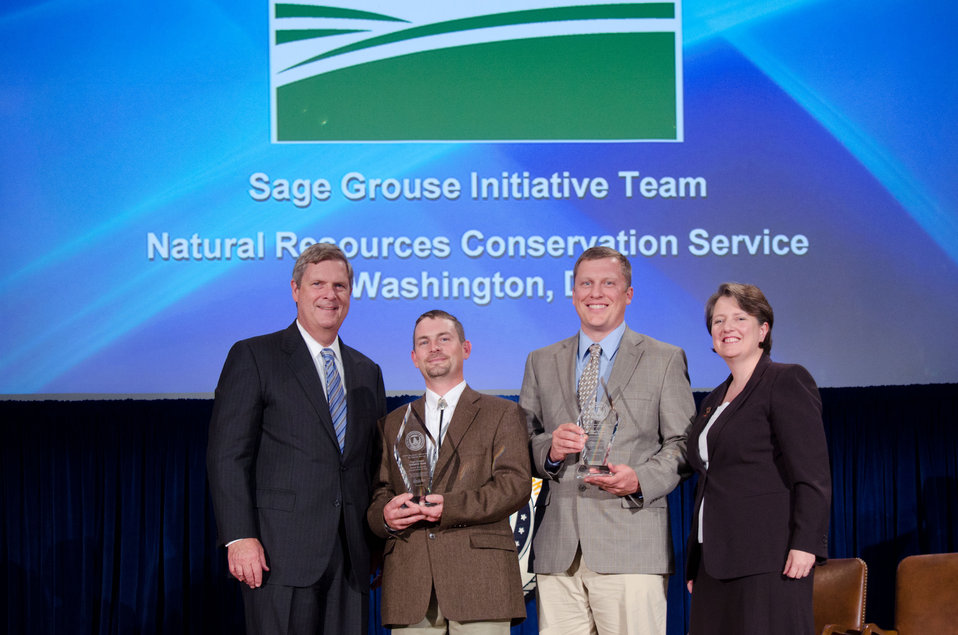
Agriculture Secretary Tom Vilsack (l) and Deputy Secretary Kathleen Merrigan (r), presents the Ensuring Our National Forests and Private Working Lands Are Conserved, Restored, and Made More Resilient To Climate Change, While Enhancing Our Water Resources Award to Sage Grouse Initiative Team, Natural Resources Conservation Service, Washington, DC. Timothy V. Griffiths and David E. Naugle, Group Leaders. For exemplary leadership in developing and implementing NRCS’s new and exciting Sage-Grouse Initiative, a spatially targeted, landscape scale approach to achieving world-class wildlife conservation through sustainable ranching. On Wednesday, September 14, 2011 in the Jefferson Auditorium at the US Department of Agriculture in Washington, DC.